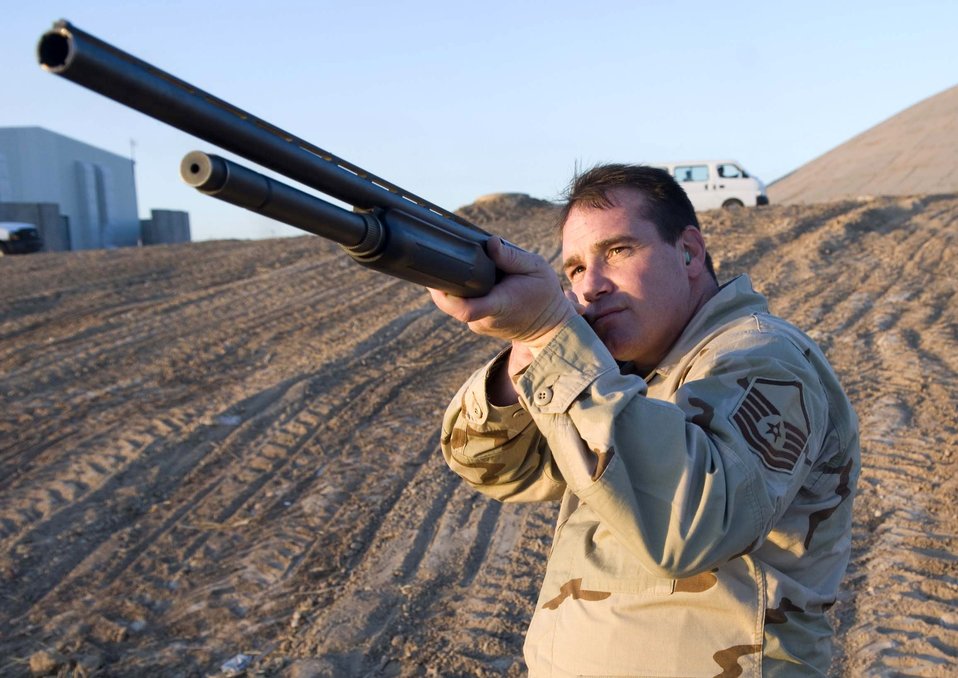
Flight safety office brings Balad bird strikes down 30 percent

Master Sgt. Brian Saunders lines up his next shot with a 12-gauge shotgun equipped with